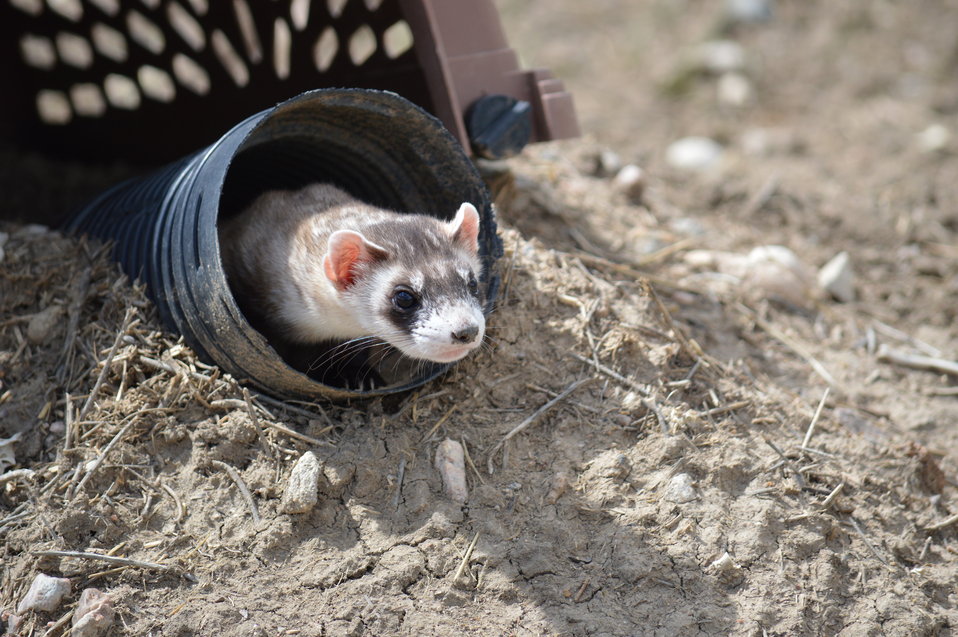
Interns visit the NBFFCC

In the summer of 2012, USFWS Region 6 interns visited the National Black-footed Ferret Conservation Center (NBFFCC) in Colorado to learn how the program reintroduces the endangered Black-footed ferret back into its native habitat.